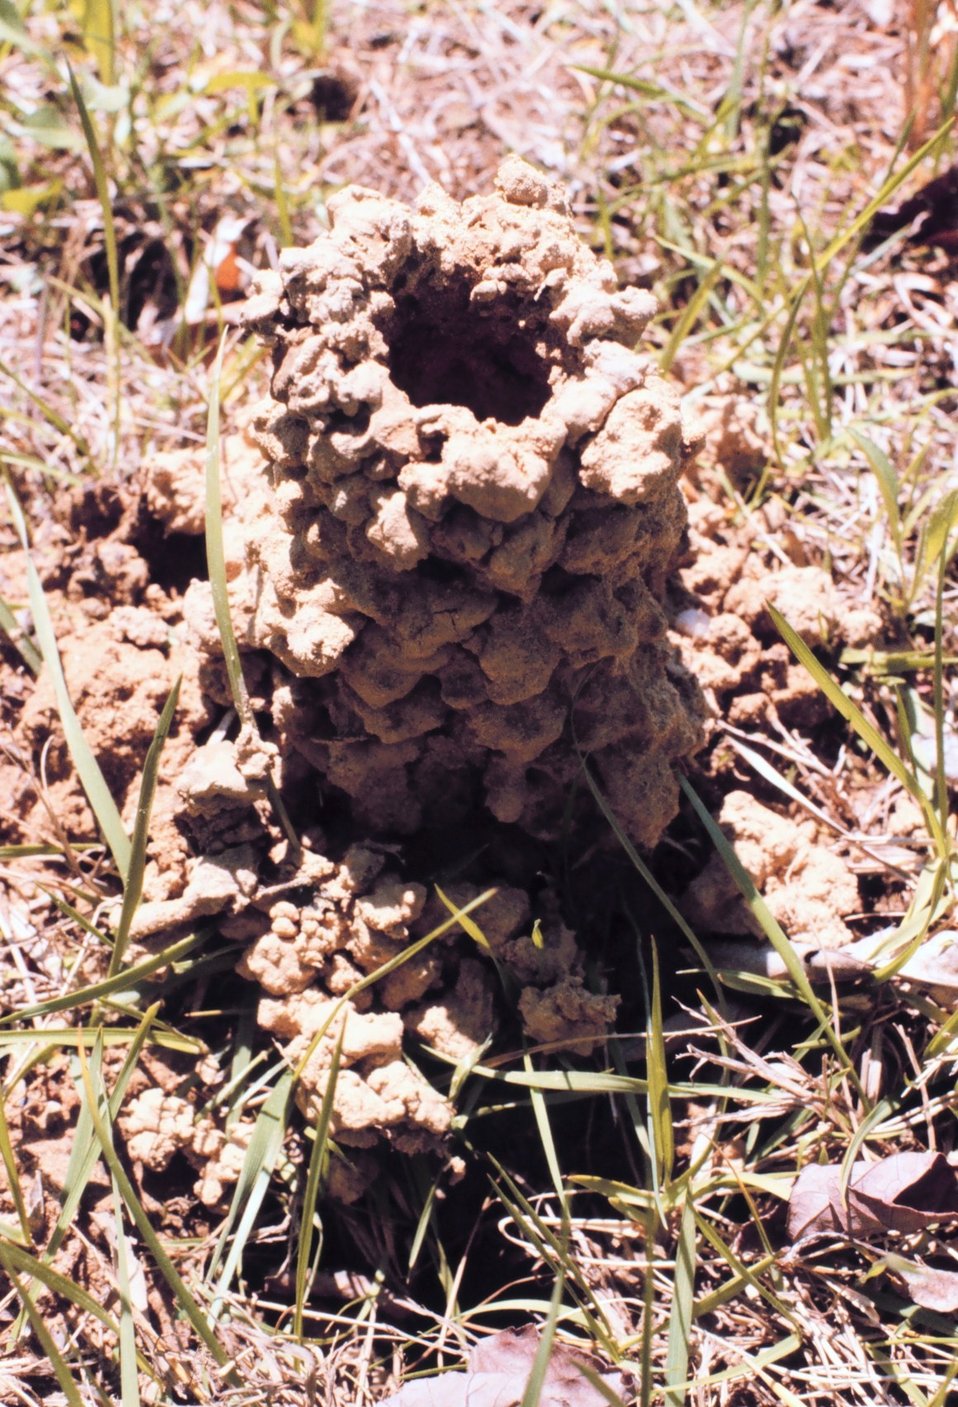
A crayfish home along a Calvert County stream. Crayfish use mud balls to create towers over their holes along freshwater streams.